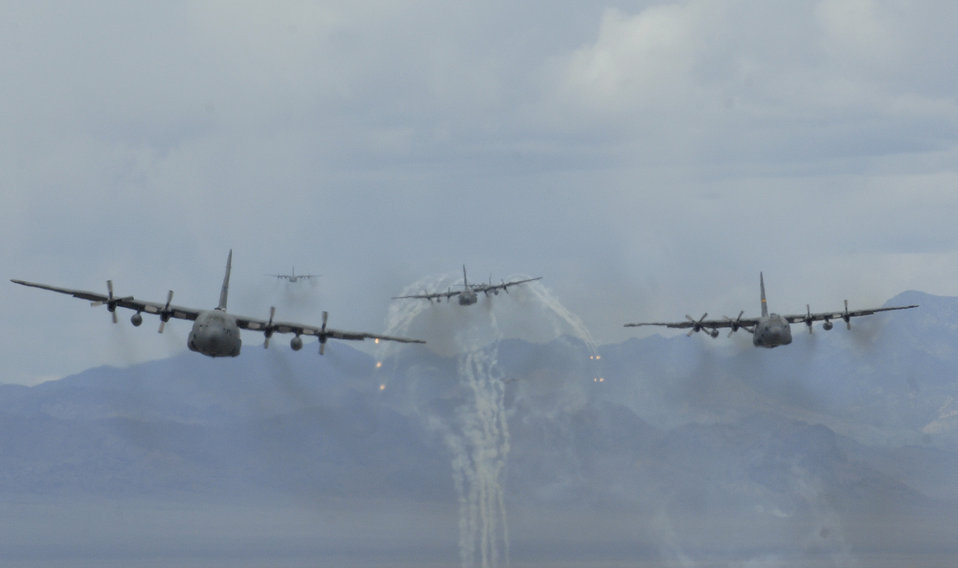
Mobility exercise

A formation of C-130 Hercules flies May 18, 2011, during an exercise above the Nevada Test and Training Range.